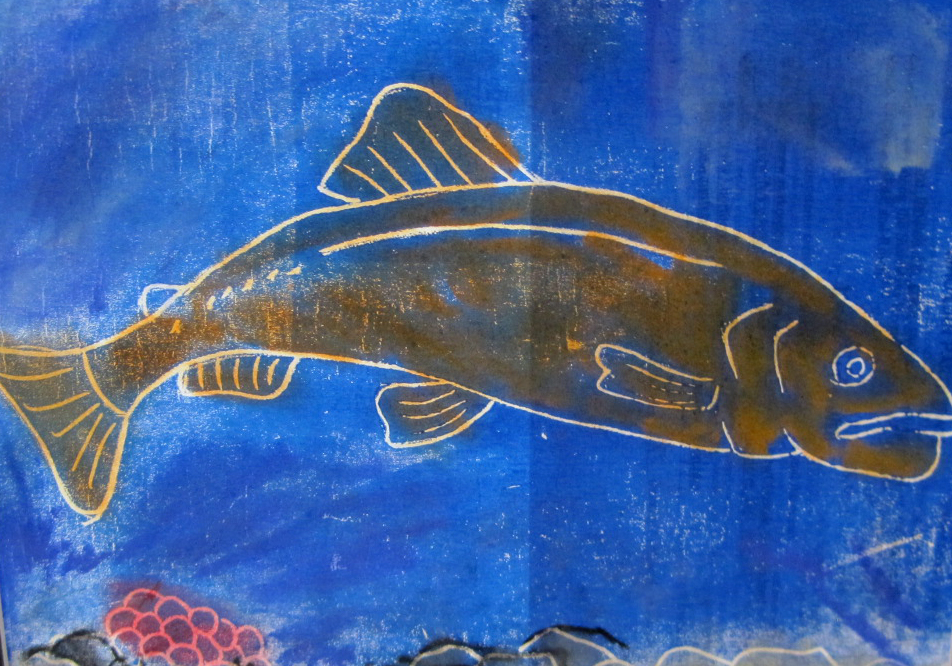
Celebrating the salmon – 2013 Salmon Festival at Stanislaus River Parks

A salmon portrait by Wyatt, a second-grader at Knights Ferry Elementary, is backlit by a bright sun. Young fans of the Chinook salmon celebrated the famous fish in drawings, paintings and hand-painted t-shirts during the fifth annual Salmon Festival, Oct. 26, 2013, at Stanislaus River Parks, the U.S. Army Corps of Engineers facility in Knights Ferry, Calif.